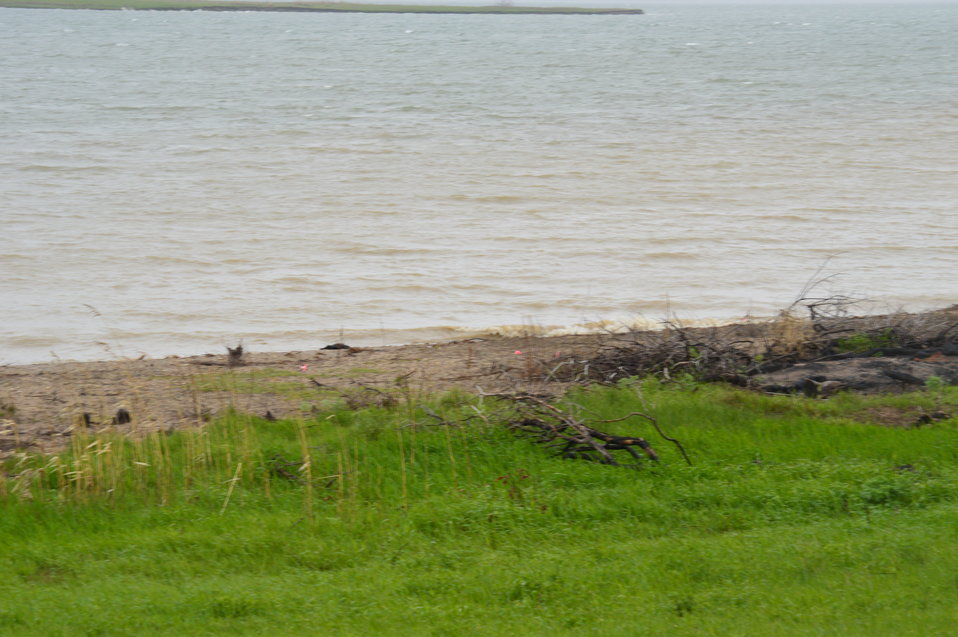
Shore of Audubon Lake

Scenery and wildlife and Audubon National Wildlife Refuge in North Dakota.